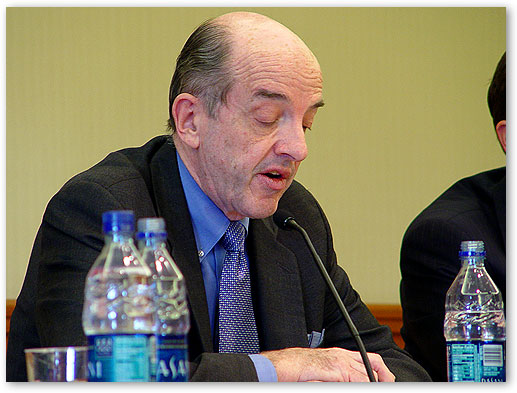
Commissioner Michael Copps